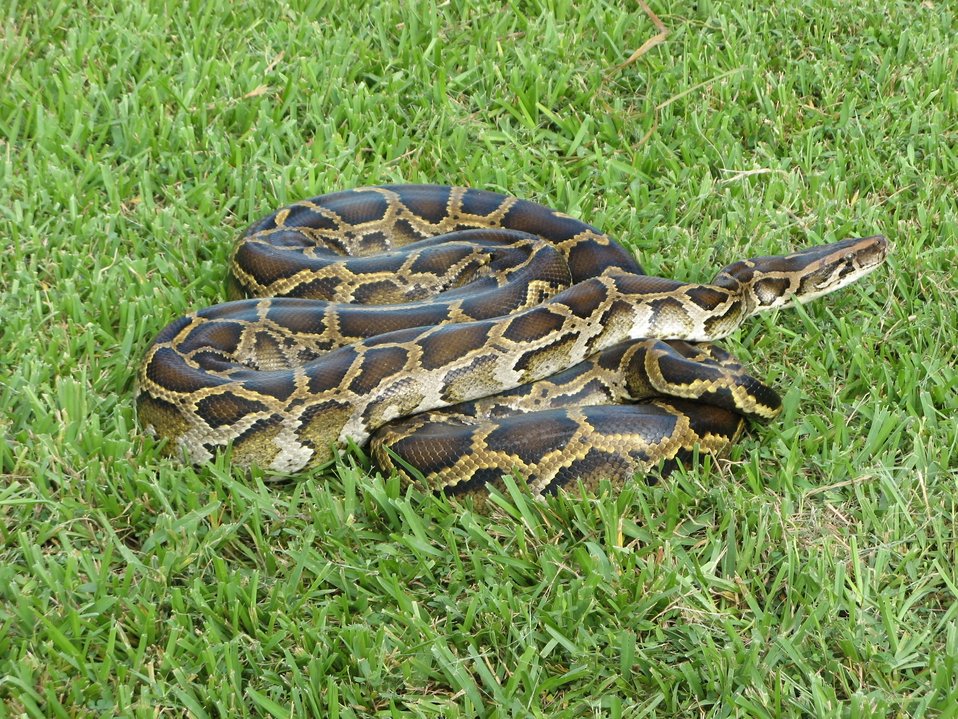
Burmese python

This Burmese python was captured in Everglades National Park in Florida, where the invasive snakes have established a large breeding population.